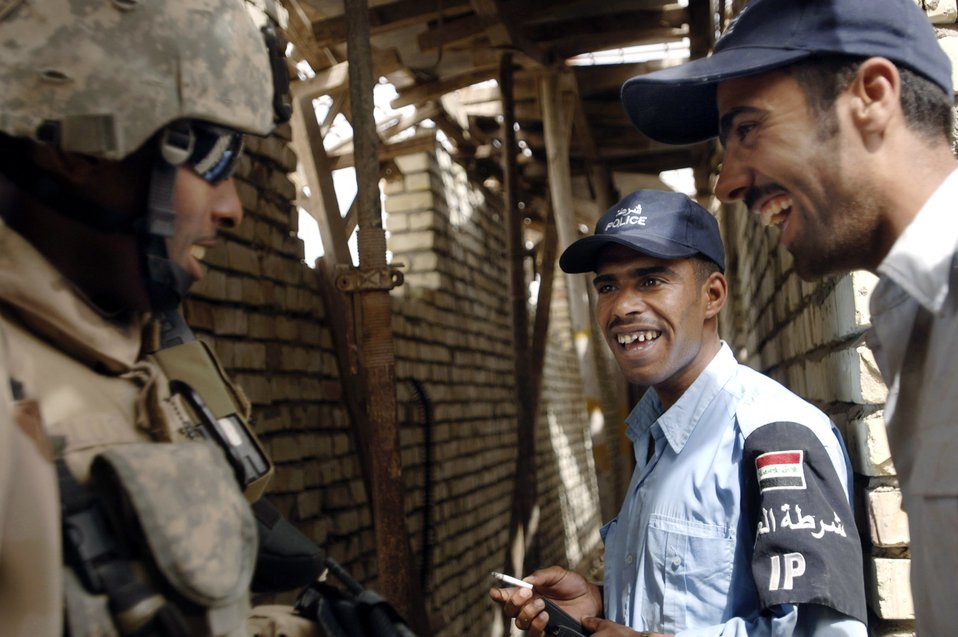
Dangerous road to progress

Staff Sgt. Michael Ellis laughs with Iraqi police May 9 in a Baghdad police station. Members of Det. 3, 732nd Expeditionary Security Forces Squadron, perform police transition team duties of mentoring, coaching and teaching Iraqi police.